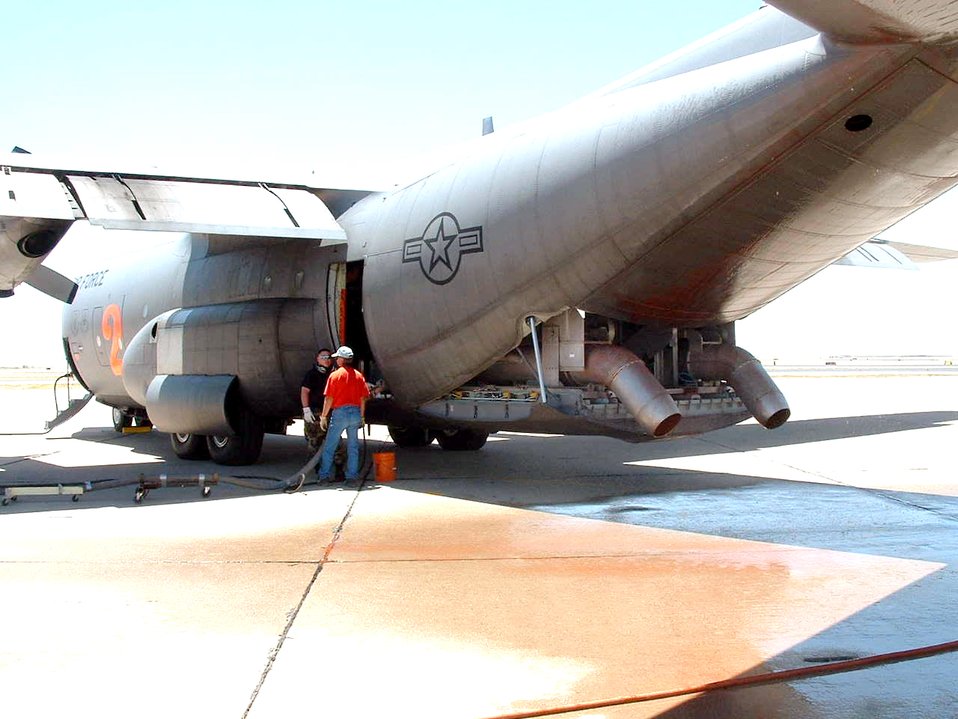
Modular airborne firefighting system

Air Force Reserve Command and Air National Guard aircrews flying C-130 Hercules aircraft, similar to this one, equipped with modular airborne firefighting systems, or MAFFS, are deploying to California to fight wildfires. The aircraft can drop up to 3000 gallons of retardant covering an area one-quarter of a mile long and 60 feet wide.